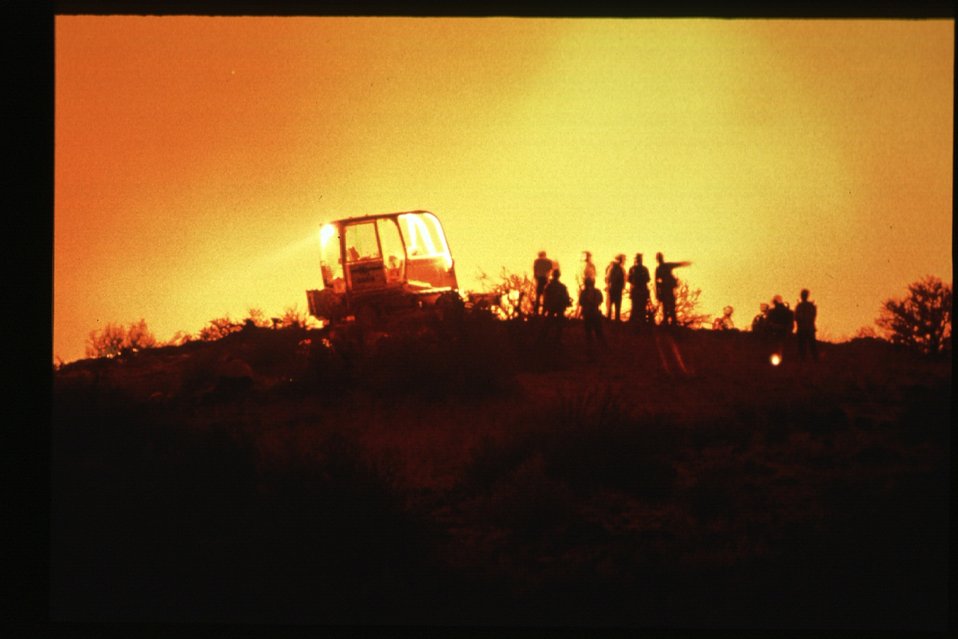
Boise Foothills Fire Danskin Mountains and South Fork of Boise River Wild Fire Fighters Four River Field Office LSRD Lower Snake River District